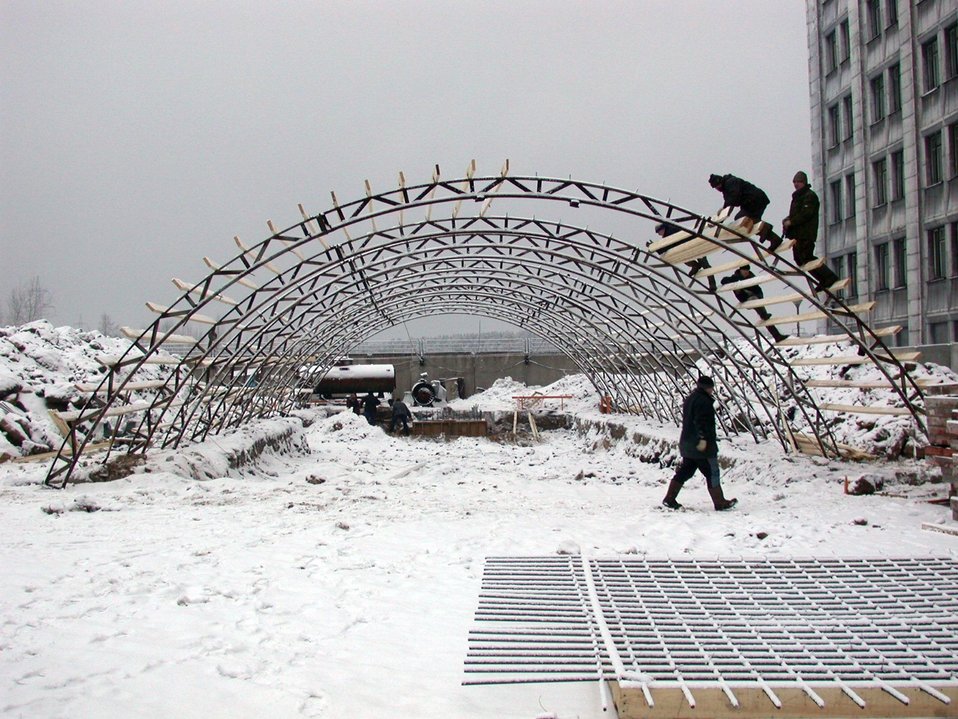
CONSTRUCTING TEST BED AT RUSSIA'S MINISTRY OF DEFENSE WEAPON SAFETY AND SECURITY TECHNOLOGY RESEARCH CENTER, ST. PETERSBURG, AS PART OF THE TOBOS PROGRAM.

SANDIA PARTICIPATED IN TOBOS, RUSSIAN ACRONYM FOR WEAPON SAFETY AND SECURITY TECHNOLOGIES FOR RUSSIAN WARHEADS, TO TEST TECHNOLOGIES AT RUSSIAN MINISTRY OF DEFENSE SITES FOR ENHANCED WARHEAD SECURITY AND SAFETY. FIELD TRIALS WERE INITIATED TO EVALUATE MONITORING TECHNOLOGIES IN NORMAL OPERATIONS IN STORAGE ENVIRONMENTS, EXTREME ENVIRONMENTAL CONDITIONS, ACCIDENT ENVIRONMENTS, AND THEFT ENVIRONMENTS.